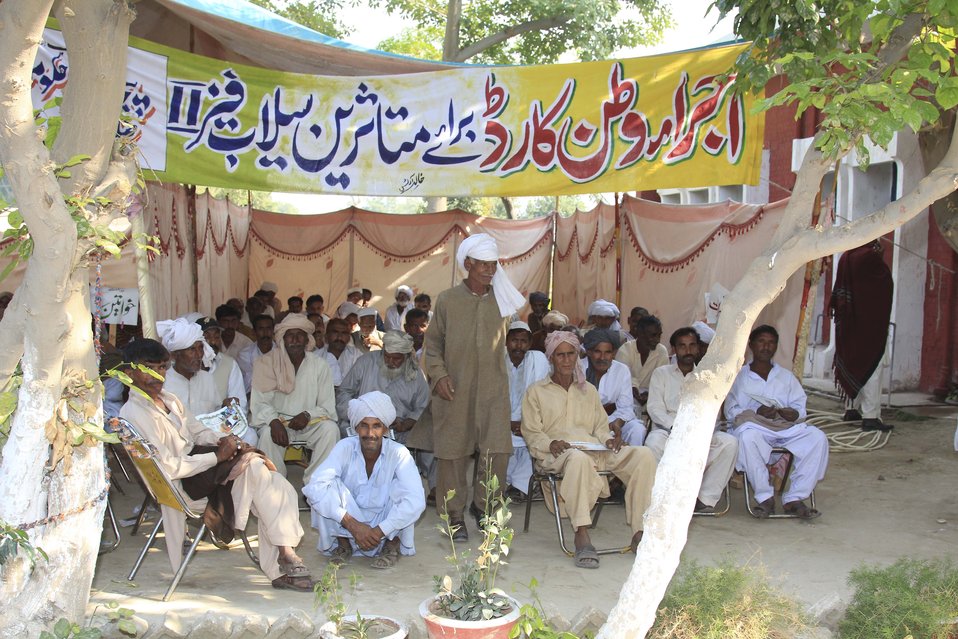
Citizens Damage Compensation Program